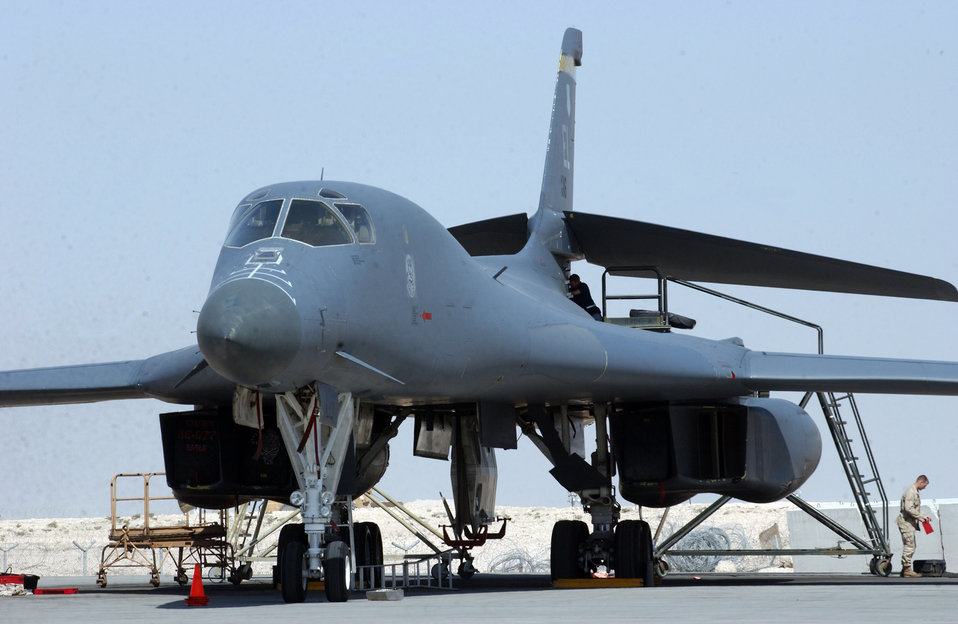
Airpower Summary for May 13, 2007

Maintainers service a B-1B Lancer prior to its next mission. B-1 bombers supported both Operation Enduring Freedom and Operation Iraqi Freedom May 13. The B-1 carries the largest payload of both guided and unguided weapons in the Air Force inventory.